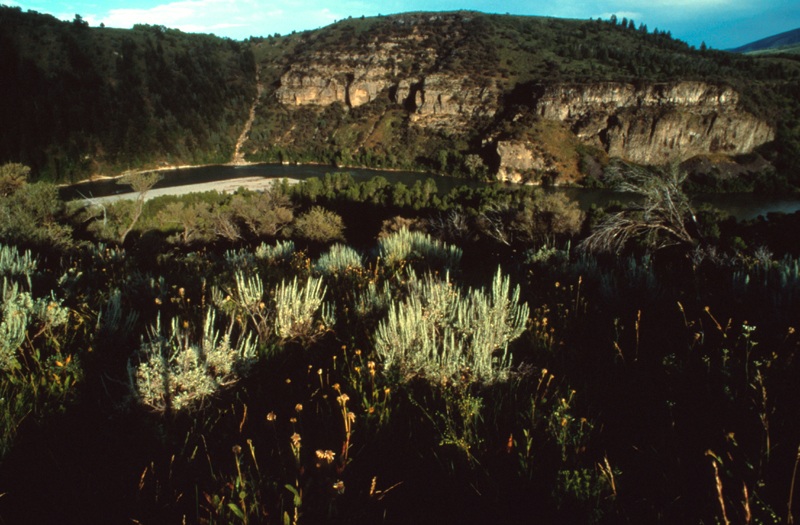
South Fork of the Snake River